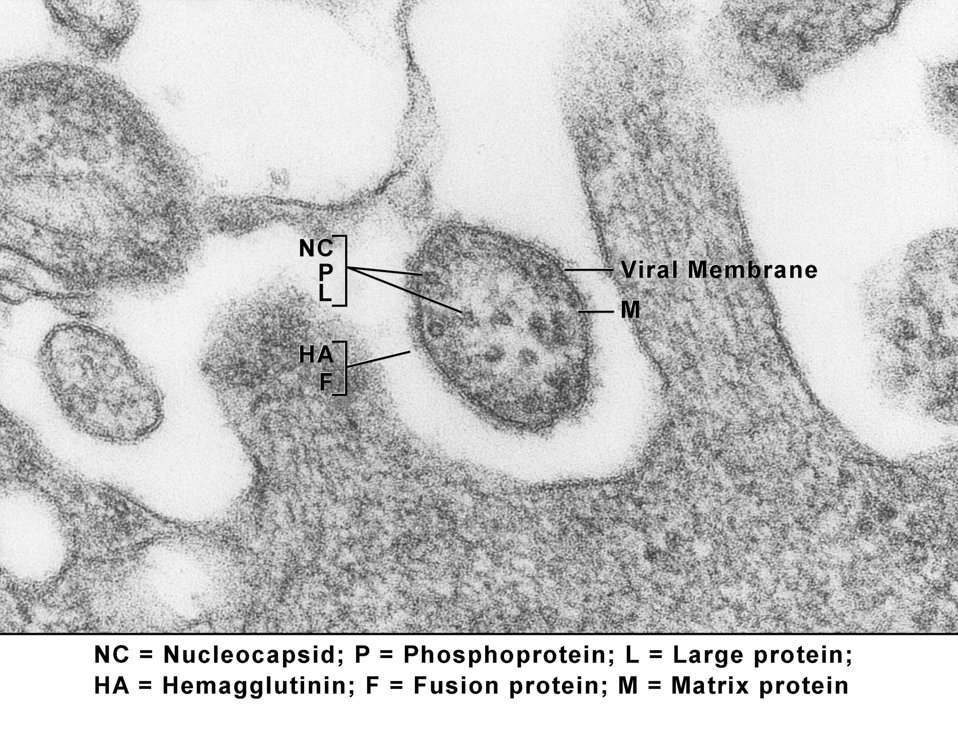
This transmission electron micrograph (TEM) revealed the ultrastructural appearance of a virus particle, or 'virion', of the measles virus. The measles virus is a paramyxovirus, of the genus Morbillivirus.